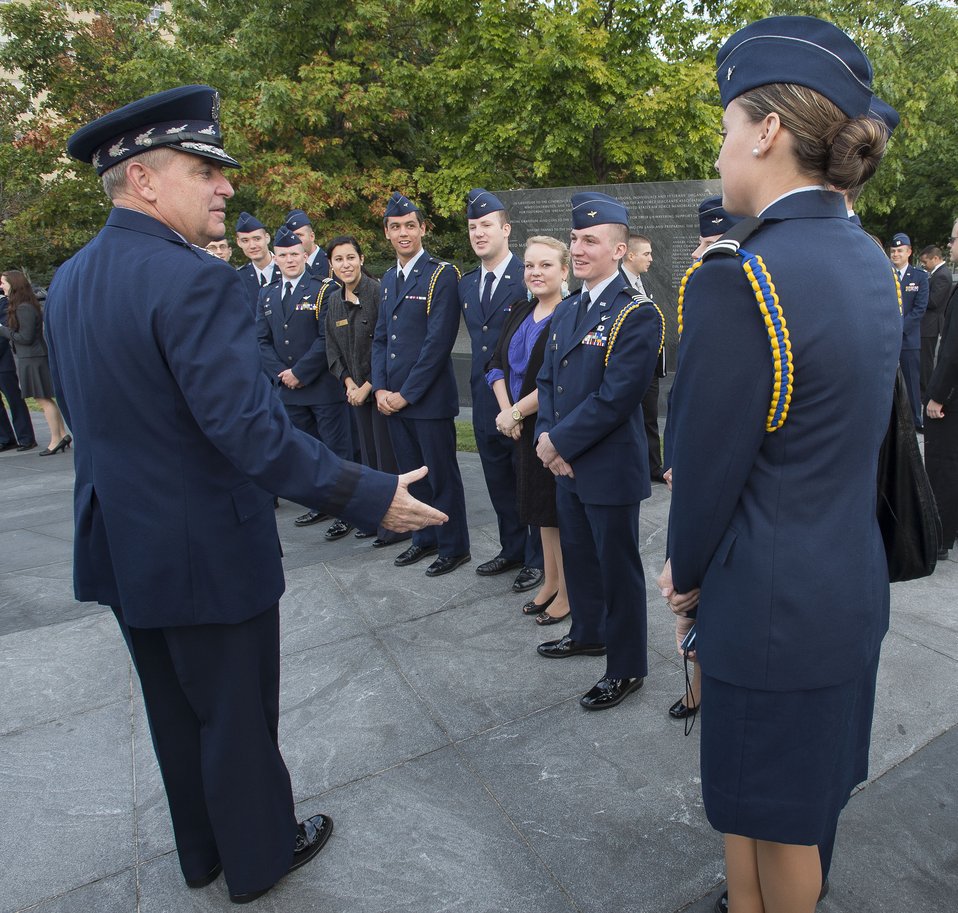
Air Force leaders attend AFA remembrance ceremony

Air Force Chief of Staff Gen. Mark A. Welsh III, left, greets Air Force ROTC cadets from the Arnold Air Society prior to an Air Force Association wreath laying ceremony at the Air Force Memorial in Arlington, Va., Sept. 16, 2012.